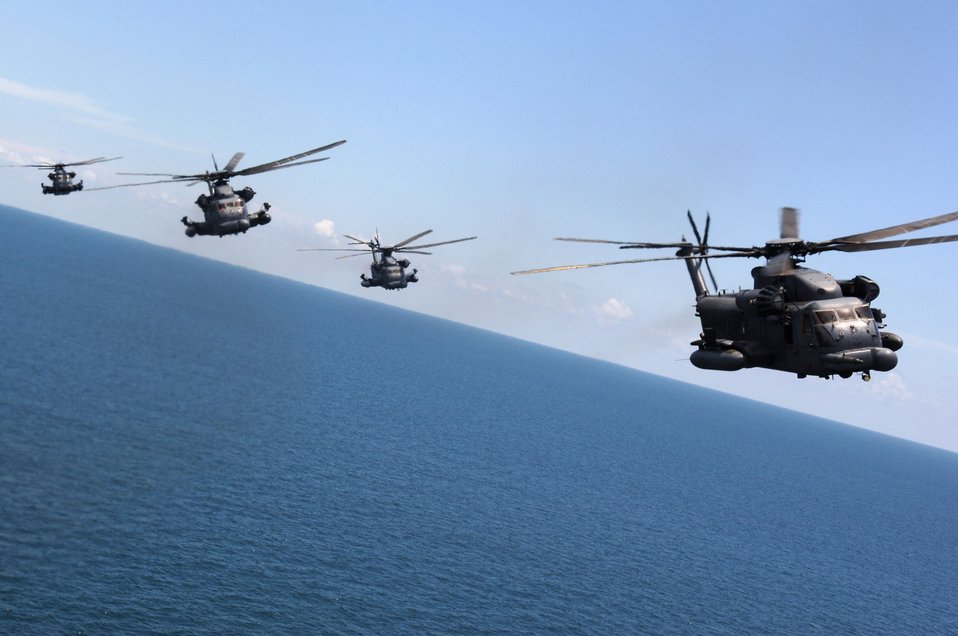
Surveying the sea

A five-ship formation of MH-53 Pave Low helicopters flies June 12 over the Gulf of Mexico. The aircraft are assigned to the 20th Special Operations Squadron from Hurlburt Field, Fla.